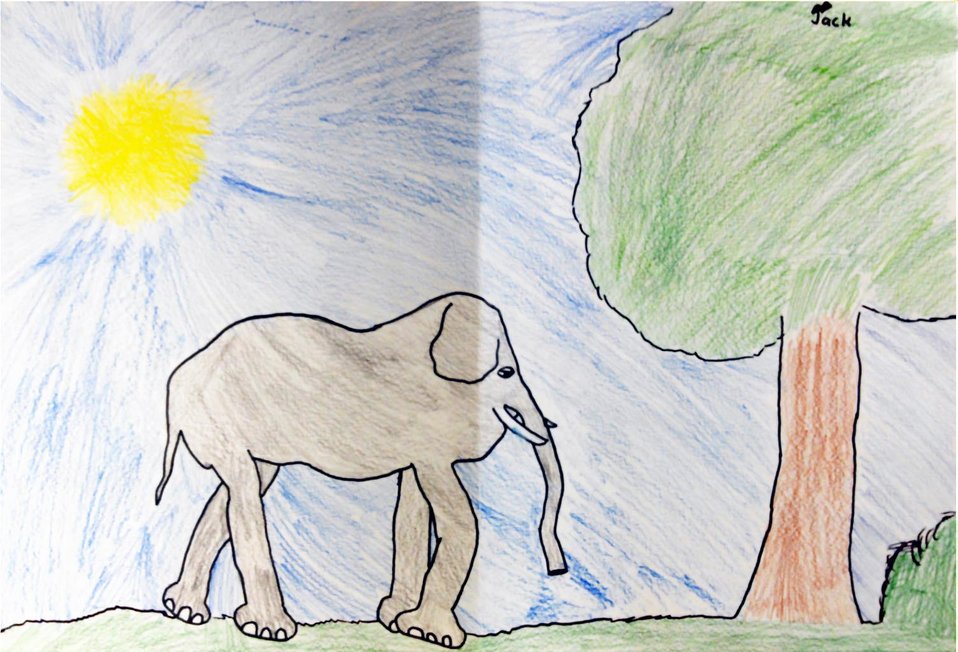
Drawing by Jack